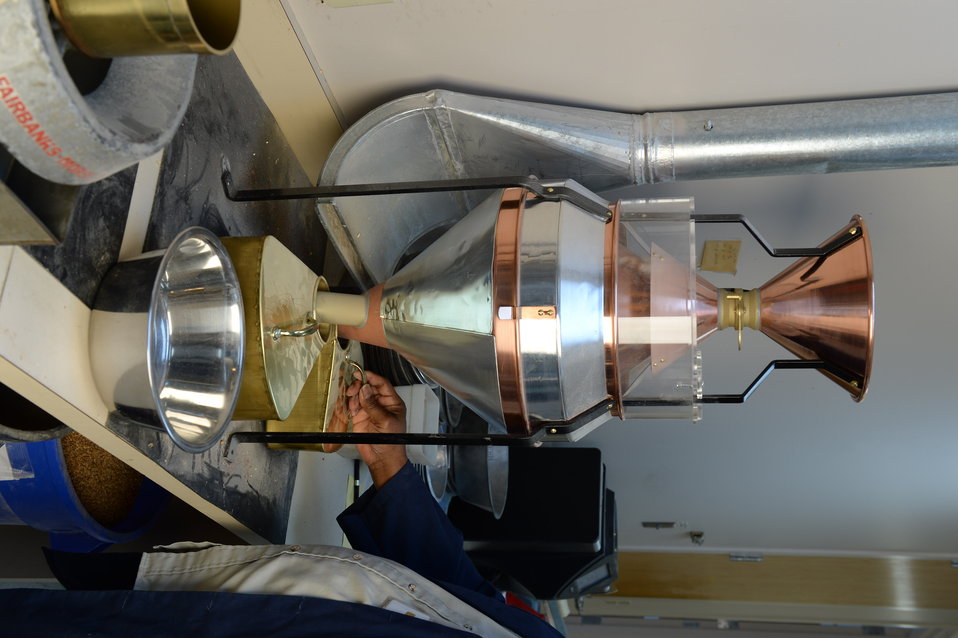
A U.S. Department of Agriculture (USDA) Grain Inspection, Packers and Stockyards Administration (GIPSA) Federal Grain Inspection Service (FGIS) scientist tests corn at the FGIS inspection laboratory in New Orleans, LA on Monday, Nov. 18, 2013.